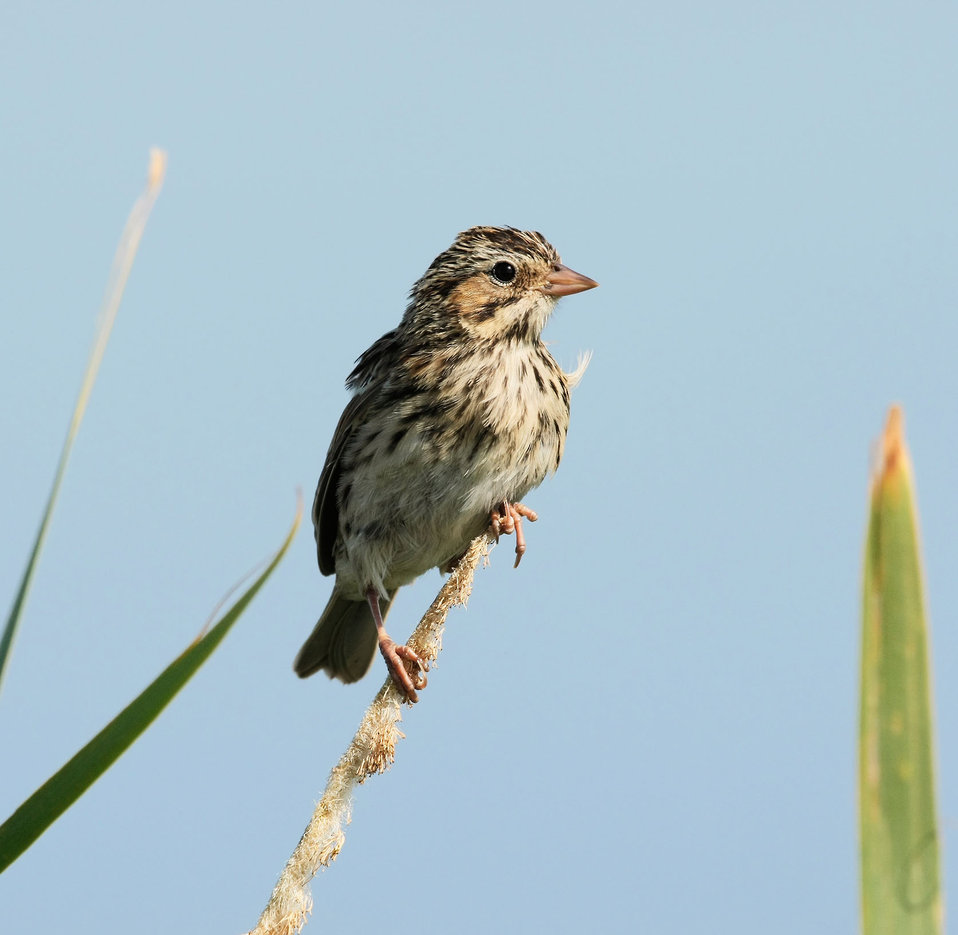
Sparrow Perched on Marsh Grass

The lands of the refuge were established to protect and provide habitat for migratory birds that cross State lines and international borders and are by law a Federal trust responsibility.

The refuge is of great value to waterfowl and shorebirds, as well as other migrating water-dependent bird species, because of the diversity of wetland and upland habitats that provide for the diverse life cycle needs of these species.